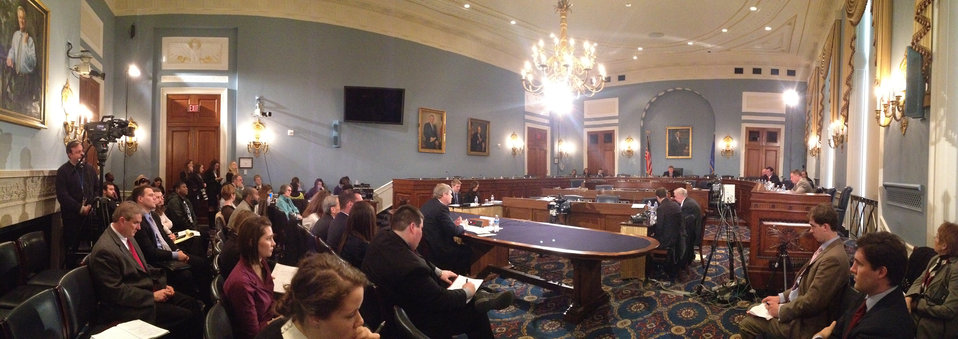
(Virtual panorama) Agriculture Secretary Tom Vilsack (at table) responds to a question from one of the House Agricultute Committee members, during his testimony before thec ommittee regarding the “State of the Rural Economy“ at the Longworth House Office Building in Washington, D.C. on Tuesday, Mar. 5, 2013.